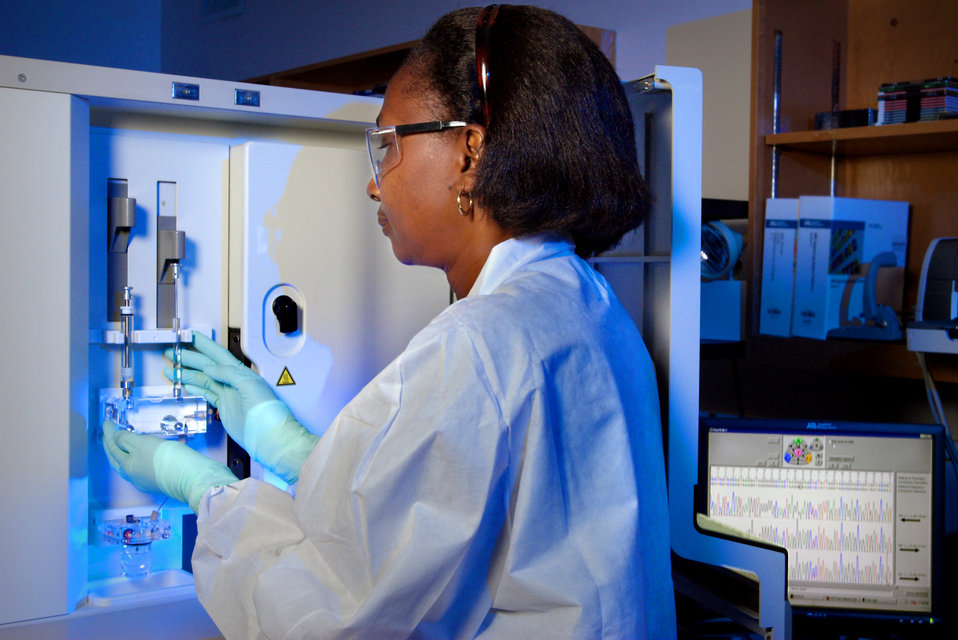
This 2007 photograph depicts CDC Guest Researcher, Dr. Karidia Diallo, preparing the ABI DNA Analyzer for drug resistance testing upon samples from PEPFAR (President's Emergency Plan for AIDS Relief) country patients. With this instrument, Dr. Diallo is able to analyze the sequencing and fragment characteristics of a uniquely coded DNA molecule. Dr. Diallo is a staff member inside the International Lab Branch (ILB) of the Global AIDS Program (GAP), which is a branch of the National Center for HIV/AIDS, Viral Hepatitis, STD, and TB Prevention (NCHHSTP).